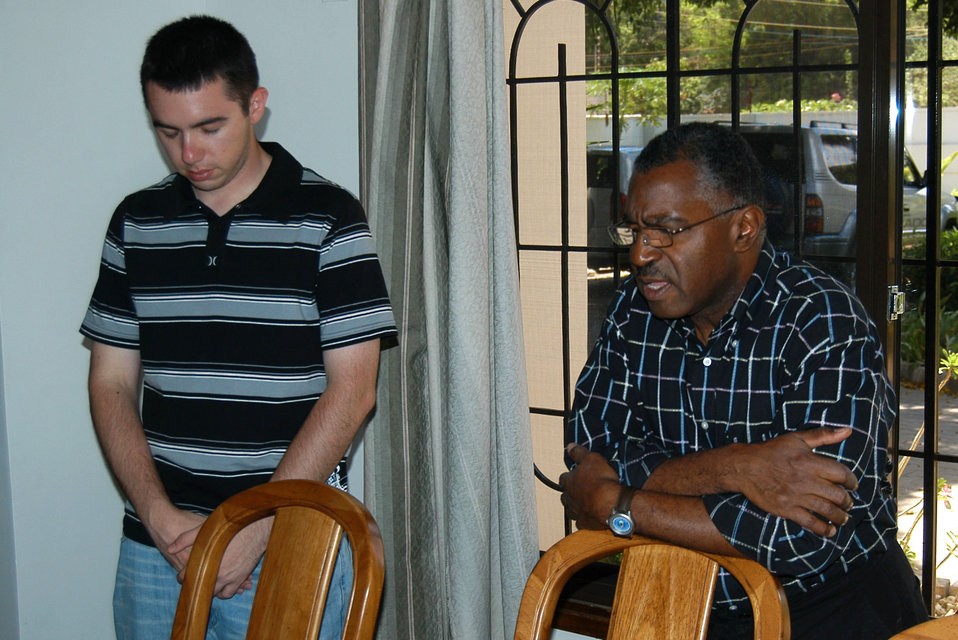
Ministry support team visits troops in Tanzania

Ch. (Lt. Col.) Lawrence F. Keith (right) says grace while Army Spc. Michael R. Johnston bows his head before eating a Thanksgiving meal at the house of a servicemember assigned to the U.S. Embassy in Tanzania. Chaplin Keith, a Blytheville, Ark., native, is the Combined Joint Task Force-Horn of Africa Religious Affairs deputy director, and Specialist Johnston, a Tulsa, Okla., native, is a civil affairs specialist assigned to Civil Affairs Team 11 of C Company, 486th Civil Affairs Battalion.